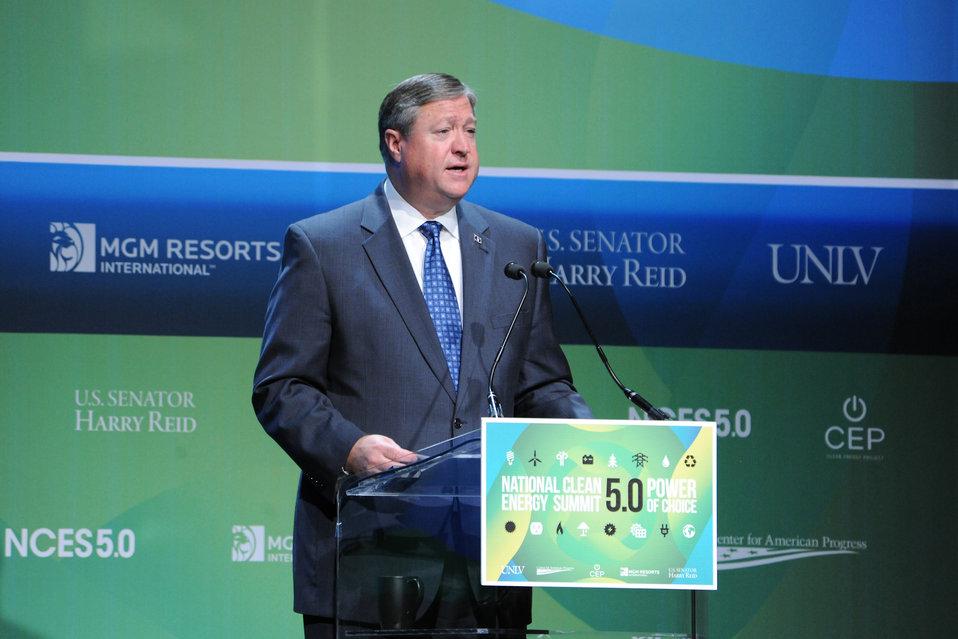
SecAF addresses clean energy summit

Secretary of the Air Force Michael Donley presents a keynote address on the Department of Defense's energy initiatives at the 2012 National Clean Energy Summit in Las Vegas Aug. 7, 2012. The secretary encouraged private industry and other government agencies to work together to create a more agile, lethal, adaptable and effective military force.